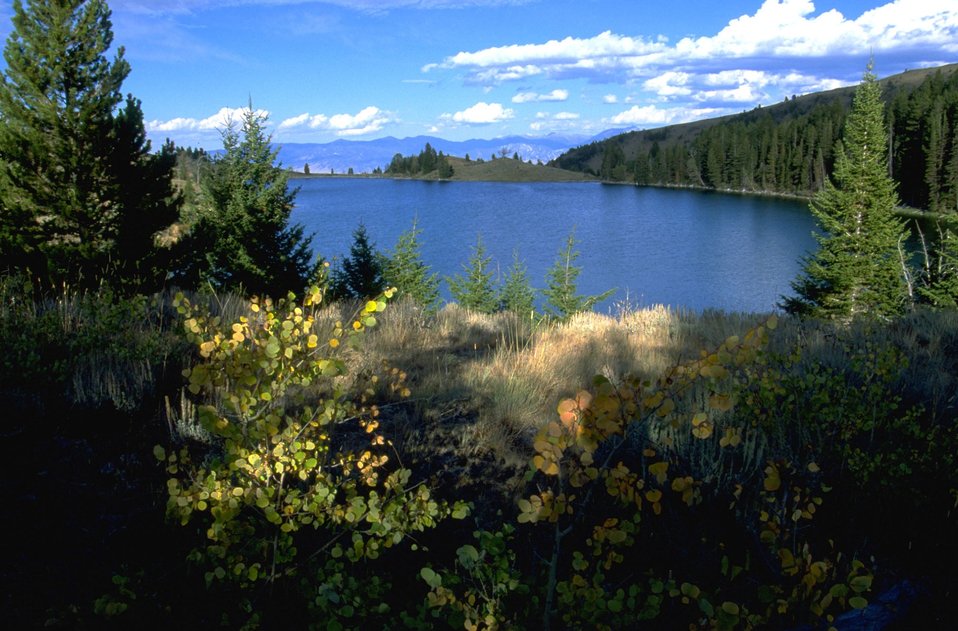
Foliage on Reservoir Lake